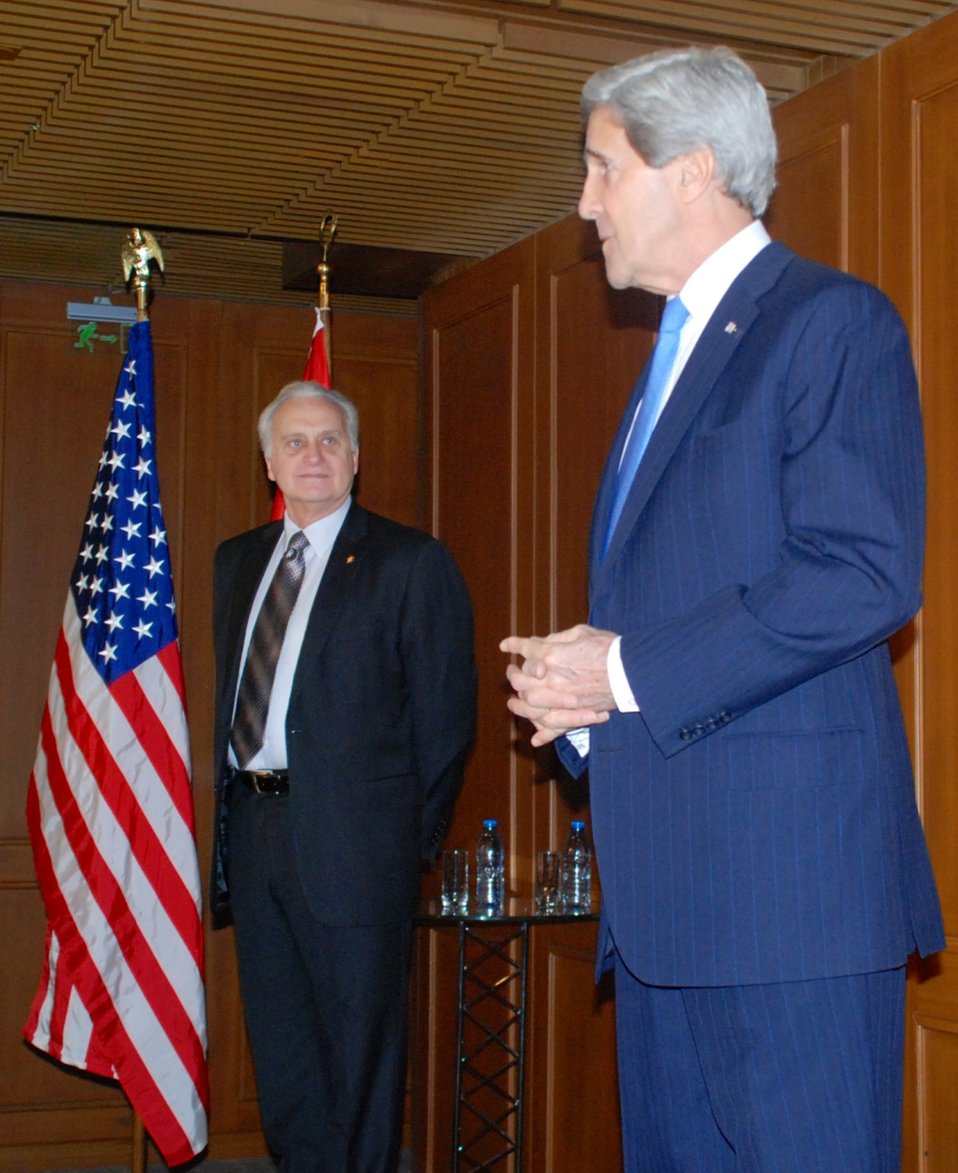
Secretary Kerry With U.S. Ambassador to Turkey Ricciardone

U.S. Secretary of State John Kerry delivers remarks to U.S. Consulate General staff and families, as U.S. Ambassador to Turkey Francis J. Ricciardone, Jr. looks on, in Istanbul, April 7, 2013.